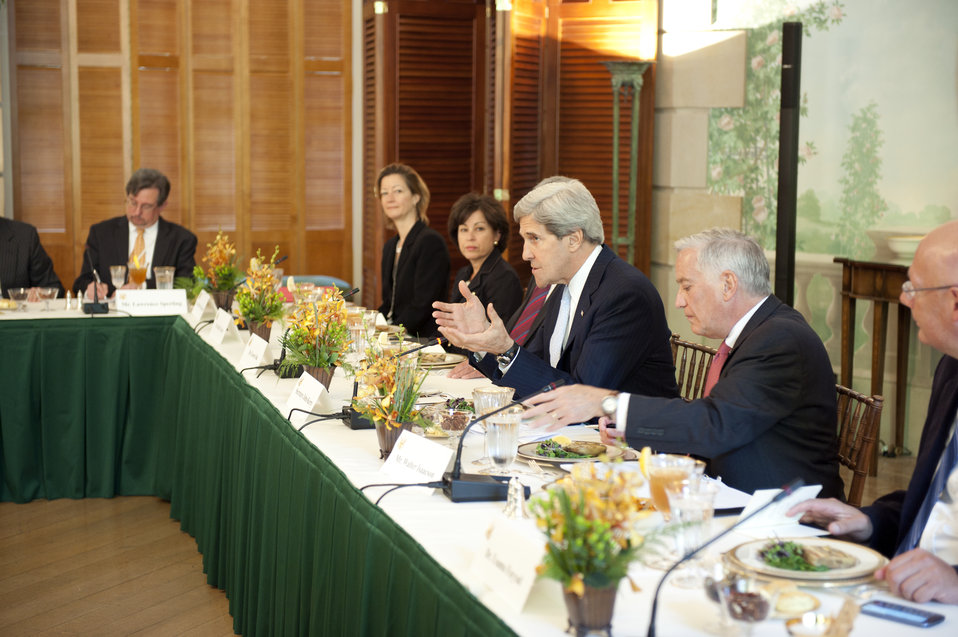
Secretary Kerry Delivers Remarks to Members of Partners for a New Beginning

U.S. Secretary of State John Kerry delivers remarks to members of Partners for a New Beginning (PNB) at the Blair House in Washington, D.C., on May 3, 2013.